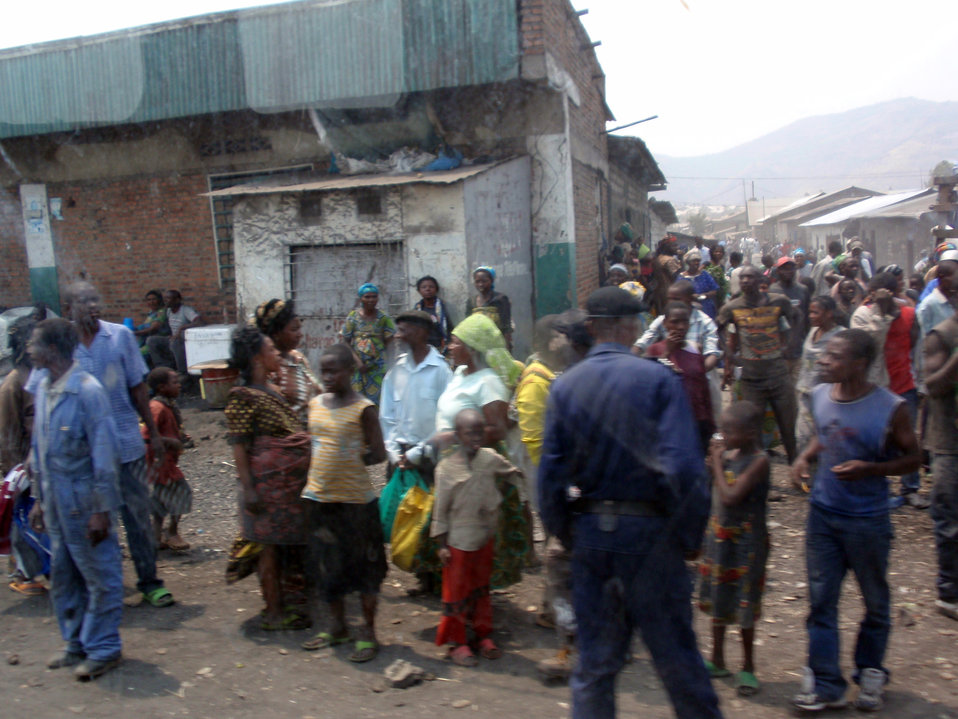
Behind the Scenes: Goma, Democratic Republic of Congo

The scenes in Goma, Democratic Republic of Congo August 11, 2009, the same day that the U.S. Secretary of State Hillary Rodham Clinton visited.